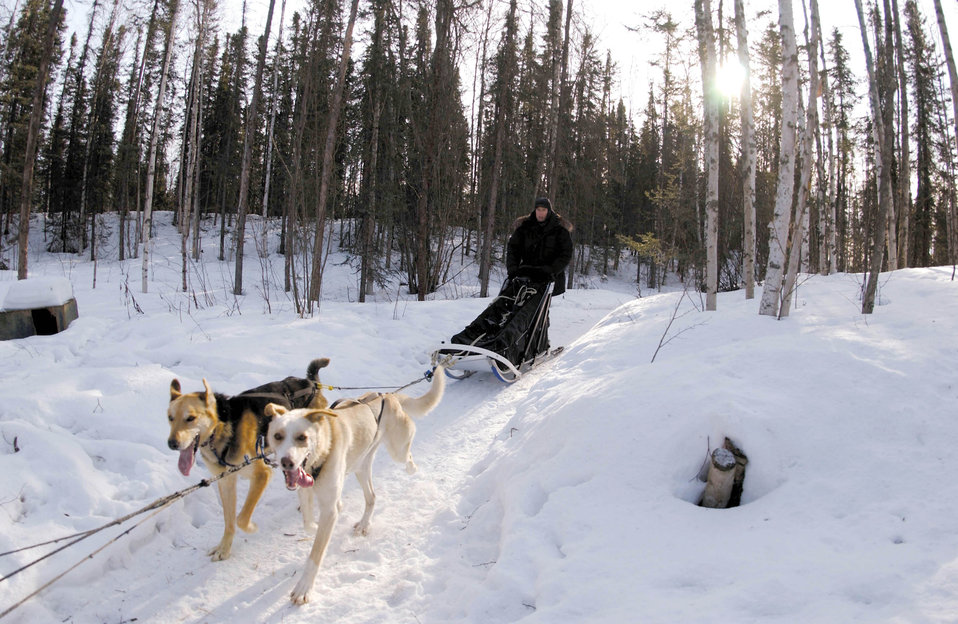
Medicine man trains for sled-dog race

HOUSTON, Alaska -- Maj. (Dr.) Thomas Knolmayer leads his team on a practice run. The two dogs in front of the sled are called wheel dogs and have to be stronger than the other 10 to 12 dogs on the team so they can pull the sled around corners and over hills. Dr. Knolmayer is a staff surgeon with the 3rd Medical Operations Squadron at nearby Elmendorf Air Force Base.